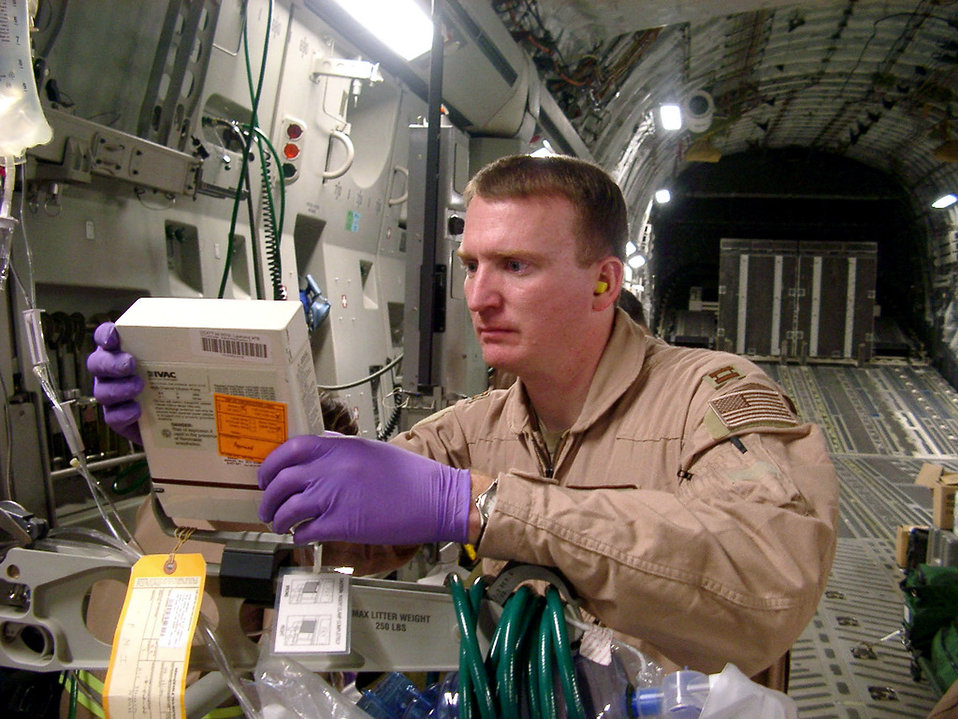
Medics take patient care sky high

OPERATION SOUTHERN WATCH -- Capt. Paul Simpson fixes an IV fluid pump aboard an aerovac mission. Besides providing patient care, aeromedical evacuation crews must maintain and operate a variety of medical equipment before and throughout each mission. Simpson is a second flight nurse deployed with the 320th Expeditionary Aeromedical Evacuation Squadron/Forward from the 375th Aeromedical Evacuation Squadron at Scott Air Force Base, Ill.